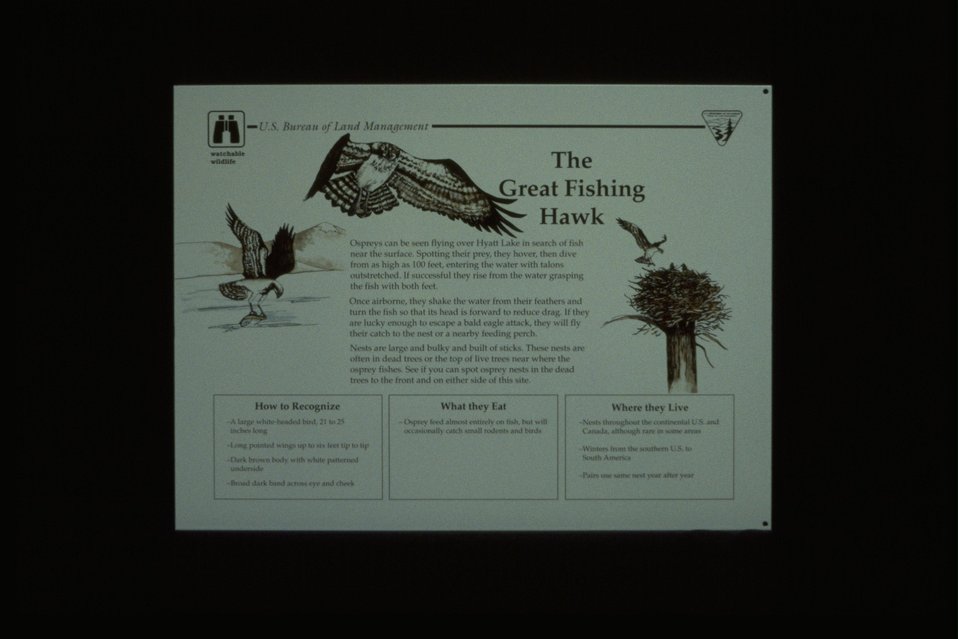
Watchable Wildlife panel from Hyatt Lake.